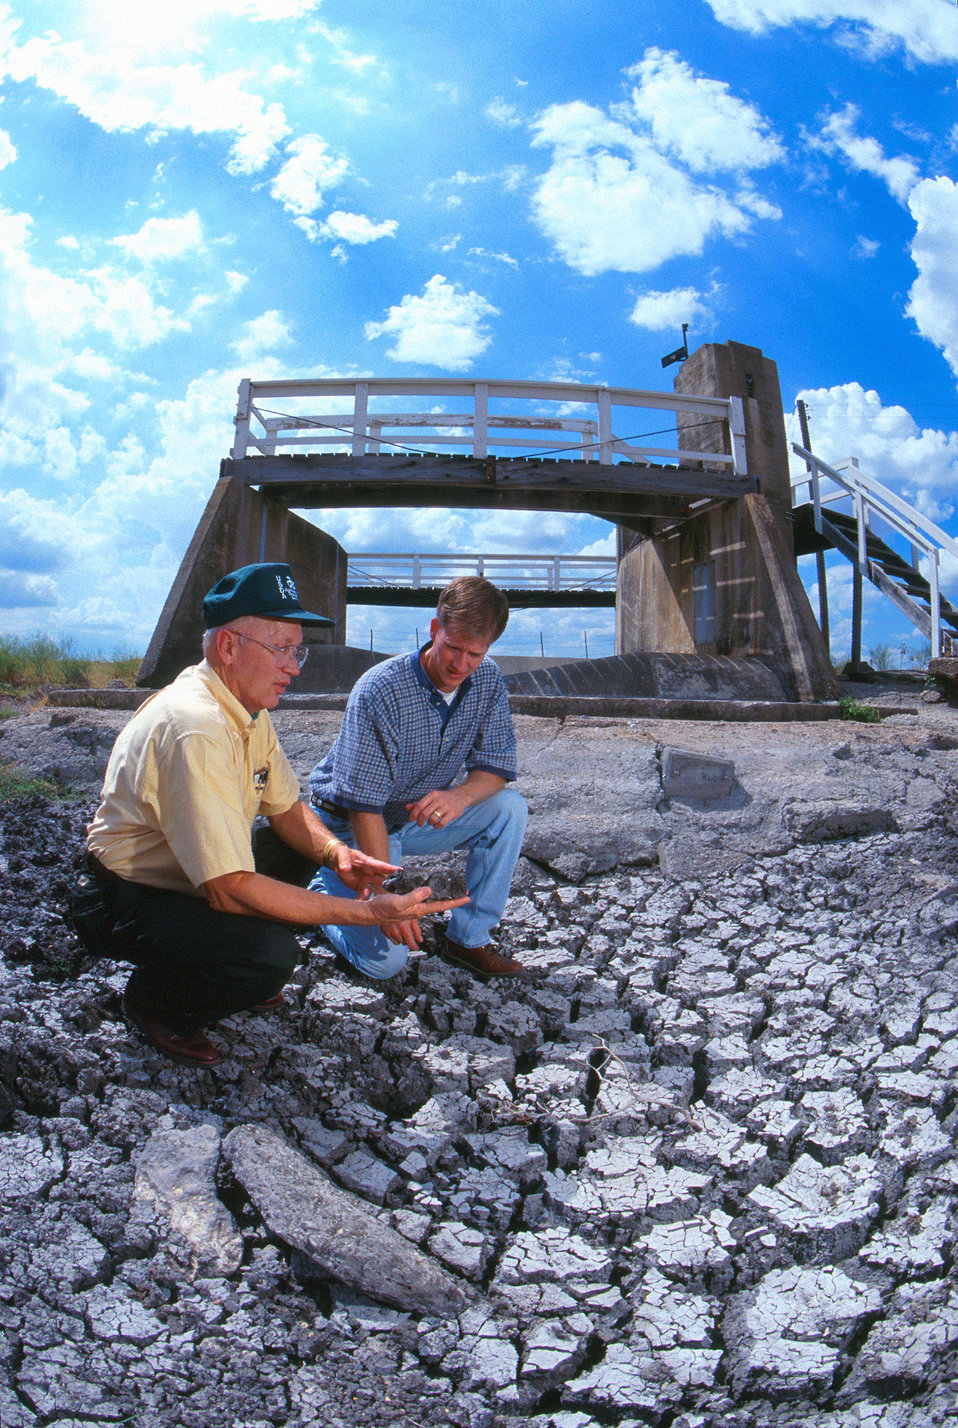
U.S. Department of Agriculture (USDA) Agricultural Research Service (ARS) agricultural engineers Clarence Richardson and Daren Harmel inspect a dry stream channel below a 15-foot flume. Several USDA ARS locations use instrumented watersheds to gather a variety of information.